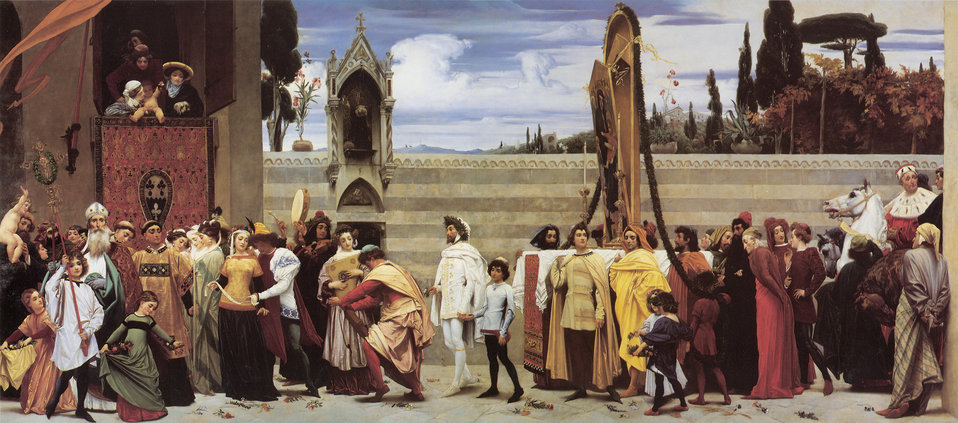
1855 Frederic Leighton - Cimabue-s celebrated Madonna